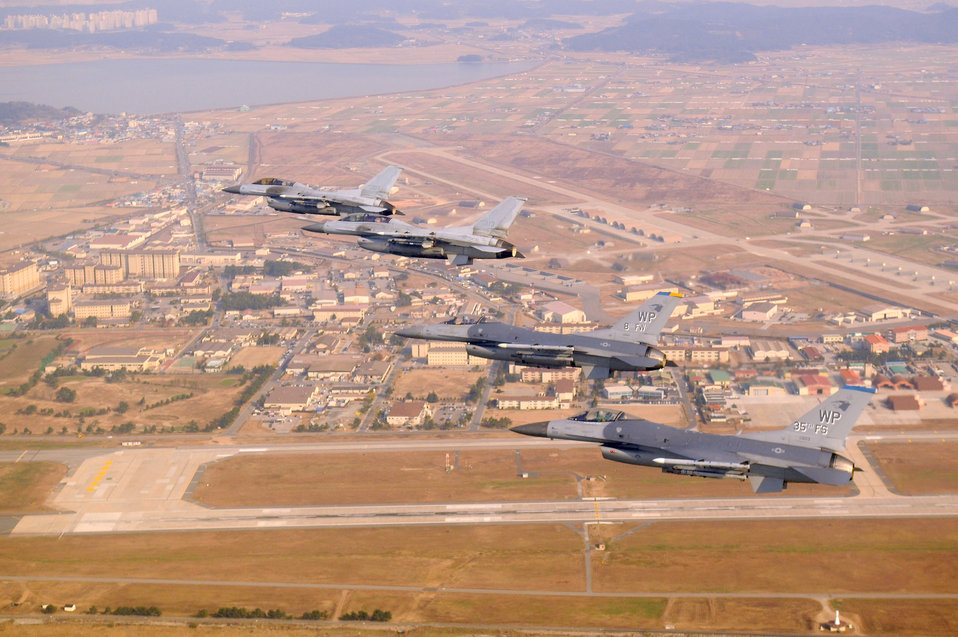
Korean War anniversary

A four-ship formation of F-16 Fighting Falcons flies during a U.S. and South Korean air force coalition flight Nov. 10, 2010, over Kunsan Air Base, South Korea. The flight was in celebration of the 60th anniversary of the Korean War.